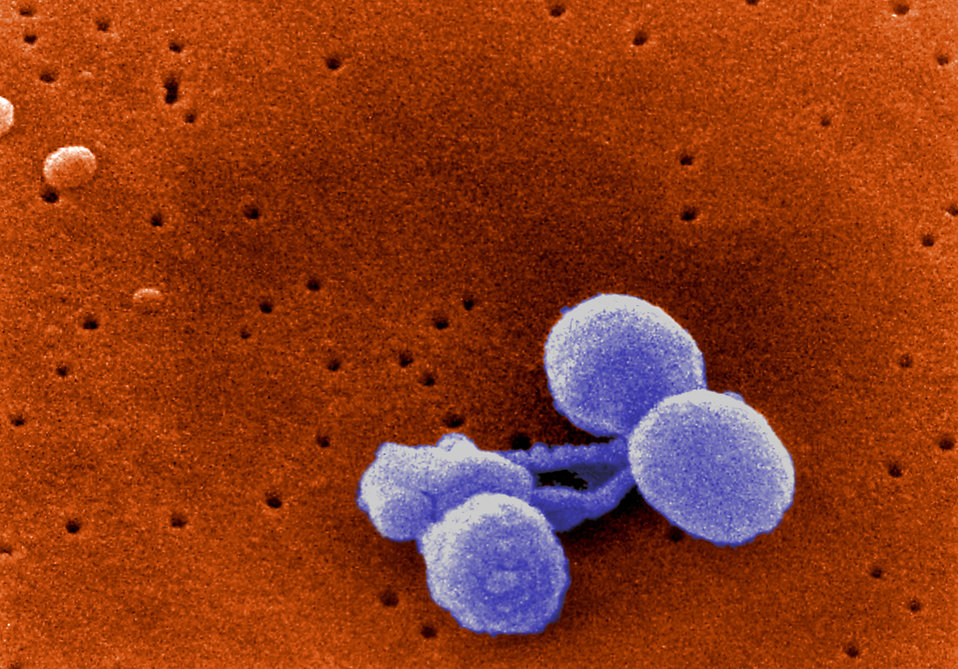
Scanning Electron Micrograph of Streptococcus pneumoniae. See PHIL 265 for a black and white version of this image.